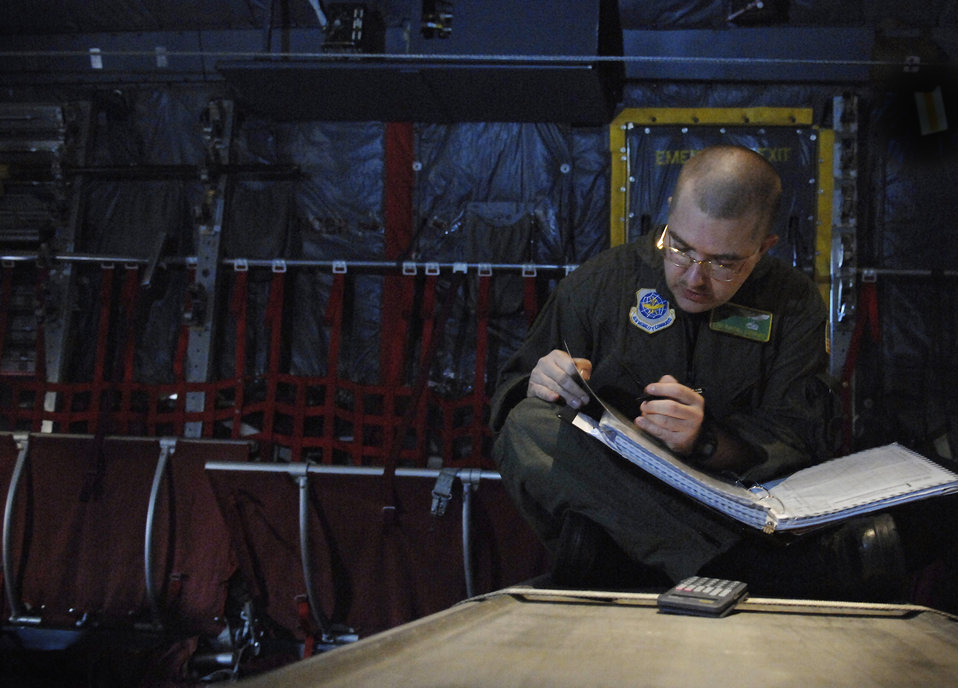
Training to make a herculean effort

Staff Sgt. Randall Sheppard figures out temperature and weight for take off and landing data on a C-130 Hercules at Little Rock Air Force Base, Ark., on Oct. 31. Sergeant Sheppard is a flight engineer in training.